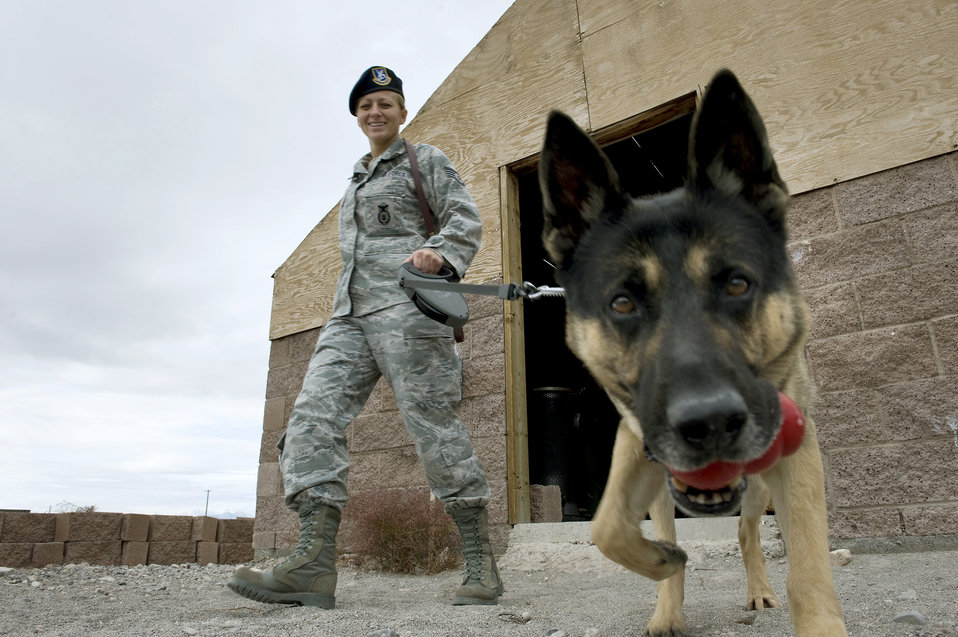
Nellis MWD training

Staff Sgt. Bobbie Ohm walks with Nero, a MWD, to search for explosives during a joint explosive detection training exercise Dec. 16, 2010, at Nellis Air Force Base, Nev. Military working dog handlers from the 99th Security Forces Squadron worked with 25 canine teams from the Las Vegas area. Sergeant Ohm is a 99th SFS MWD handler.